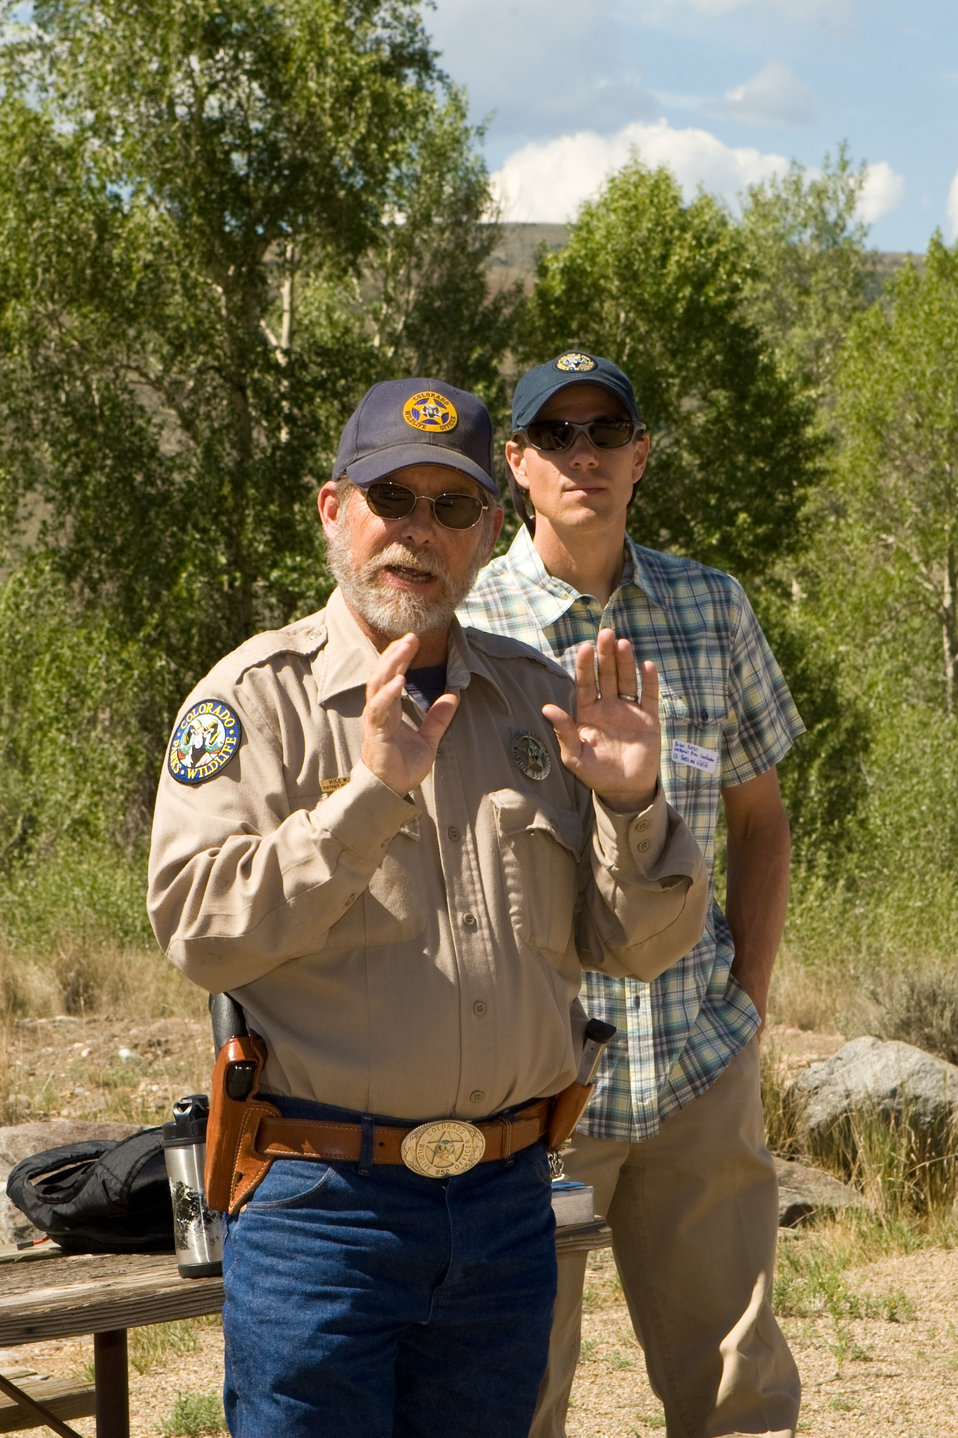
Colorado Rare Plant Conservation Initiative

The Colorado Rare Plant Conservation Initiative (RPCI) is a partnership of 23 statewide and regional agencies, private organizations, and academic institutions working to conserve 121 rare plants in Colorado. As part of these efforts the group developed the Colorado Rare Plant Conservation Strategy, developed Best Management Practices to reduce energy development impacts, addressed climate change, and developed focused strategies for the conservation of individual species at eight priority landscapes. The group has also worked to coordinate volunteer efforts for plant conservation across the state.